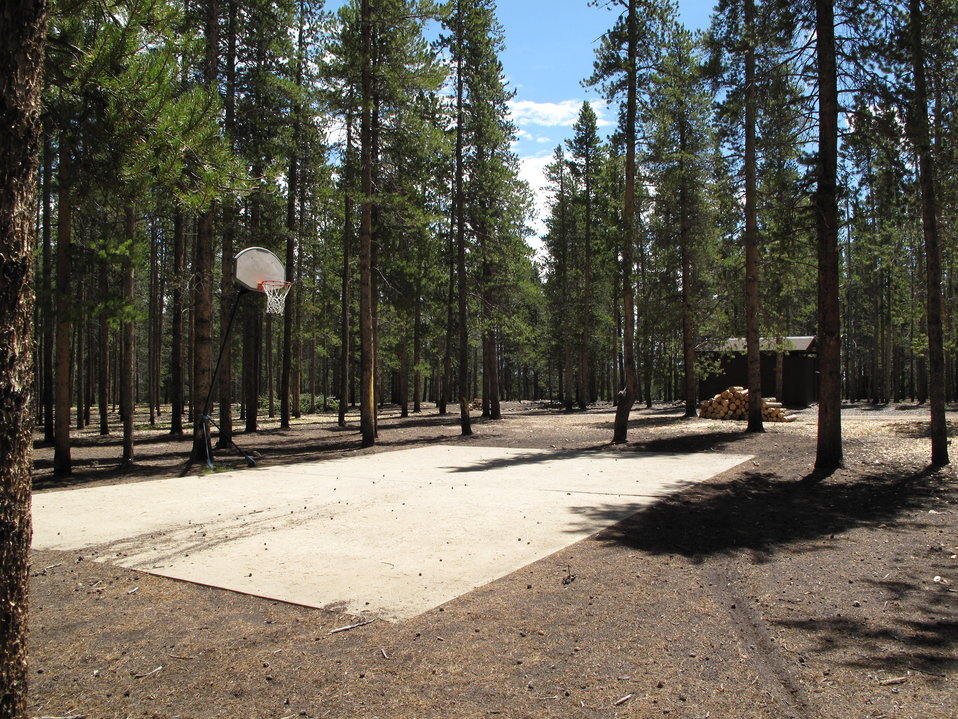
Leadville National Fish Hatchery

Half Basketball court